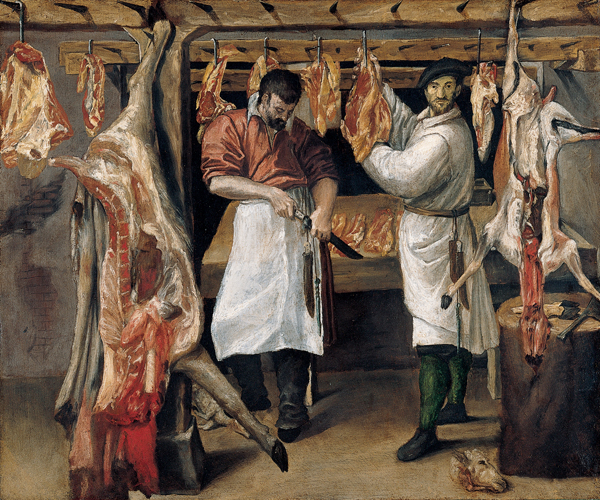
'The Butcher's Shop', oil on canvas painting by Annibale Carracci